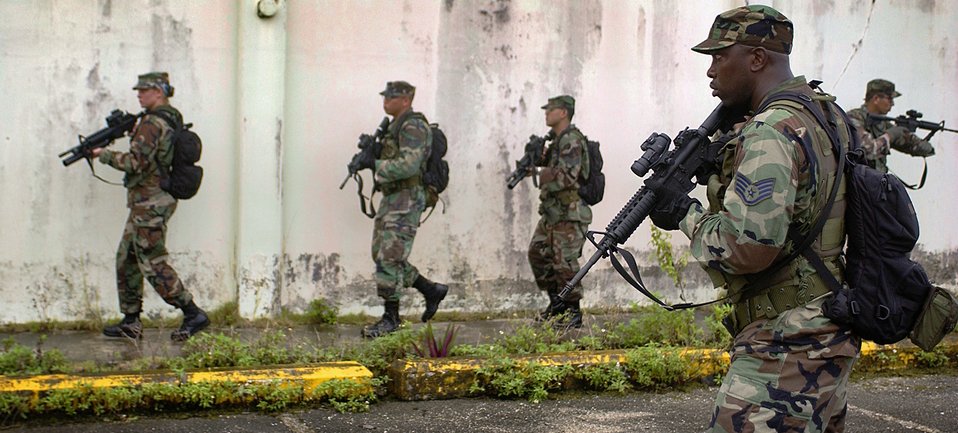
Through the jungle

ANDERSEN AIR FORCE BASE, Guam (AFPN) -- Staff Sgt. Deroni Brown protects his tactical tracking team during a training mission. Airmen are learning tactical tracking techniques from the Guam Police Department during a weeklong course in the jungles of Guam.